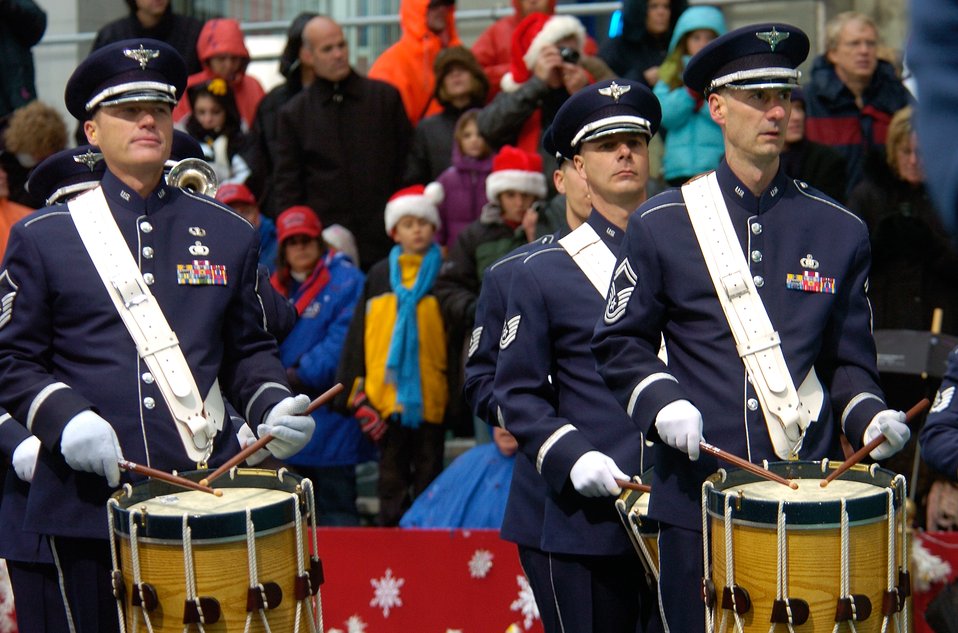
Macy's Thanksgiving Day Parade

Members of the U.S. Air Force Academy Marching Band play for spectators at the review stand of the 80th Macy's Thanksgiving Day Parade in New York City, N.Y., Nov. 23.